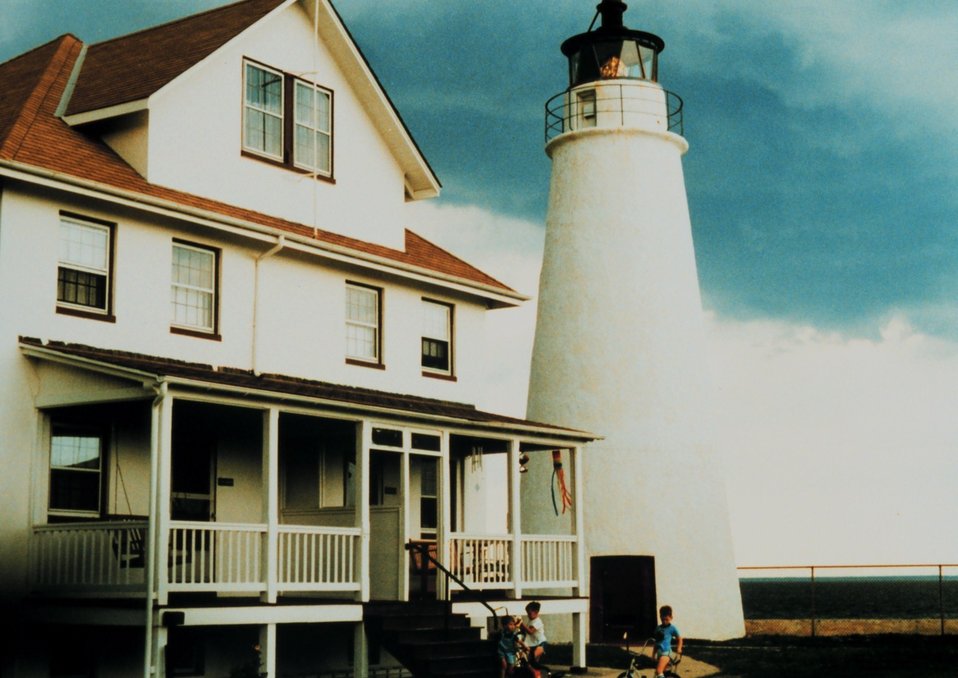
The Cove Point Lighthouse